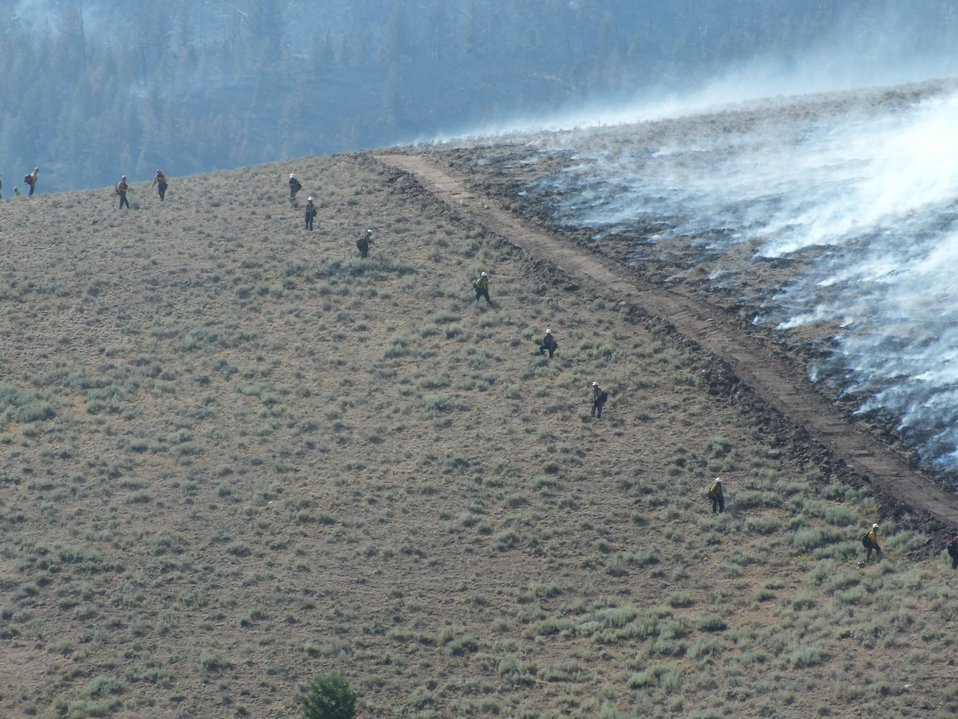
Firefighters work on fire line at the Lodgepole Fire on Jul. 30, 2013. The Lodgepole Fire in the Salmon-Challis National Forest near Challis, ID began on Jul. 20, 2013 by lightning has consumed approximately 20,325 acres and is approximately 40% contained.